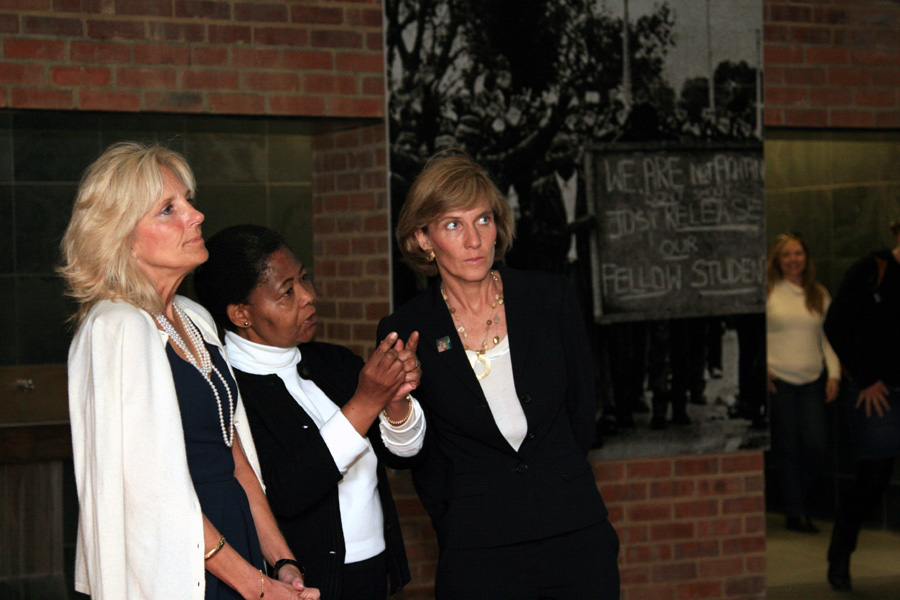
Dr. Jill Biden and Liz Berry Gips Visit Hector Pieterson Museum

Dr. Jill Biden, wife of Vice President Joseph Biden, and Liz Berry Gips, wife of U.S. Ambassador to South Africa Donald H. Gips, visit the Hector Pieterson Museum in Soweto, South Africa, on June 12, 2010.